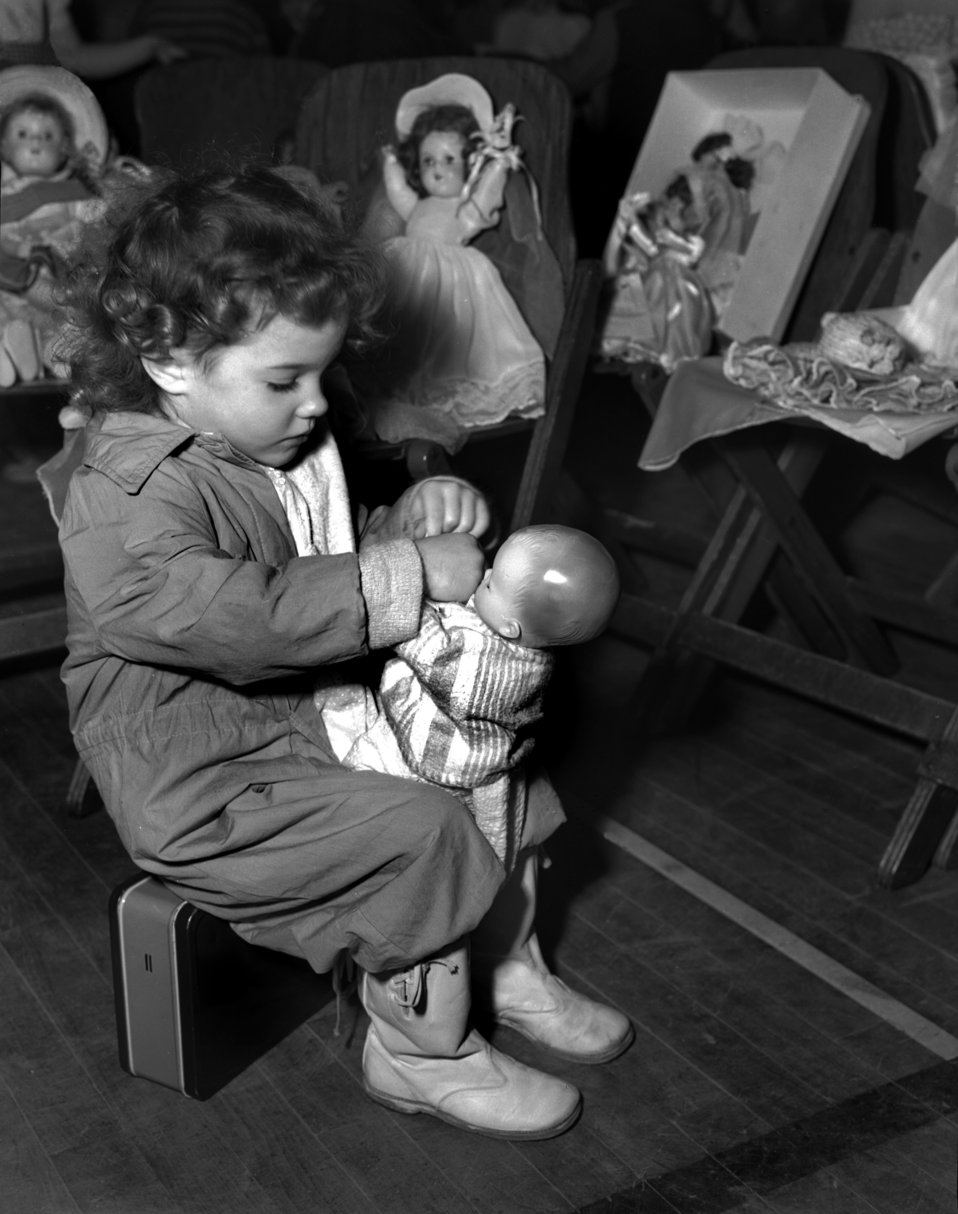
Doll Show Highland View School Oak Ridge

3235-4cd DOE photo by Ed Westcott 1-10-1947 Oak Ridge Tennessee